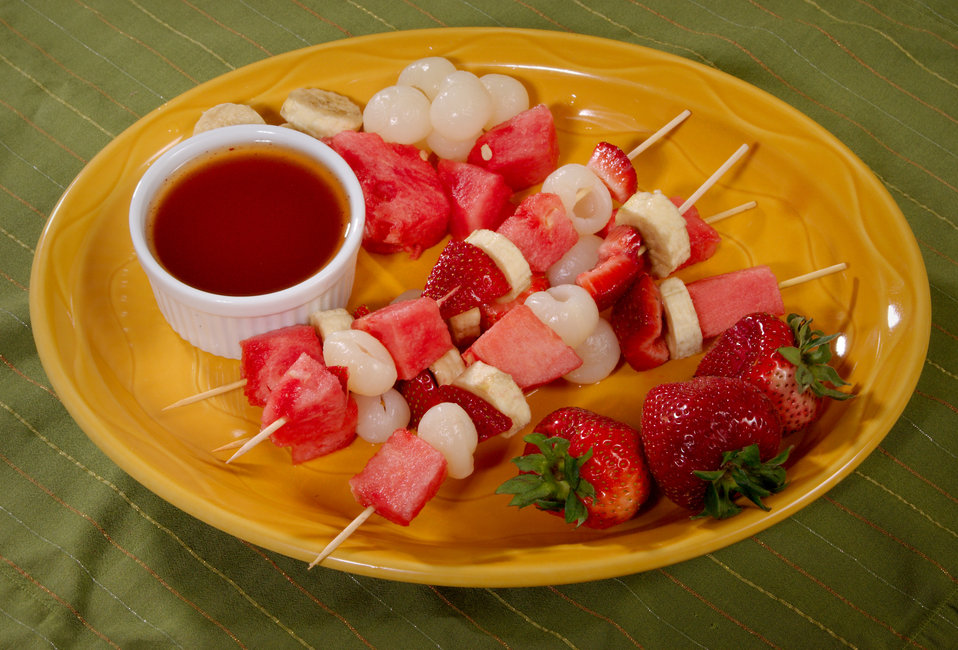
This platter featured a wonderfully healthy selection of fruits arranged on kabobs, which included watermelon, strawberries, lychees, and bananas. Also included, was a low-fat, low-sodium dressing. This selection is nutrient-rich, as well as low in calories, and packed with vitamins and minerals such as vitamin C, iron, and potassium.